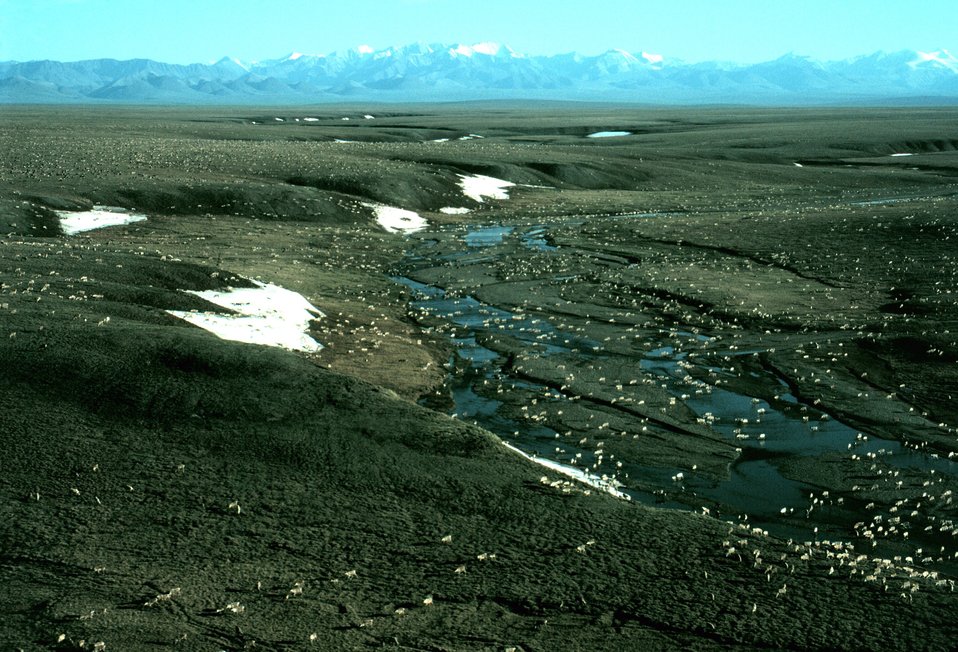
1002 Area: Porcupine Caribou Herd

Porcuine Caribou Herd in the 1002 Area of the Arctic National Wildlife Refuge coastal plain, with the Brooks Range mountains in the distance to the south.